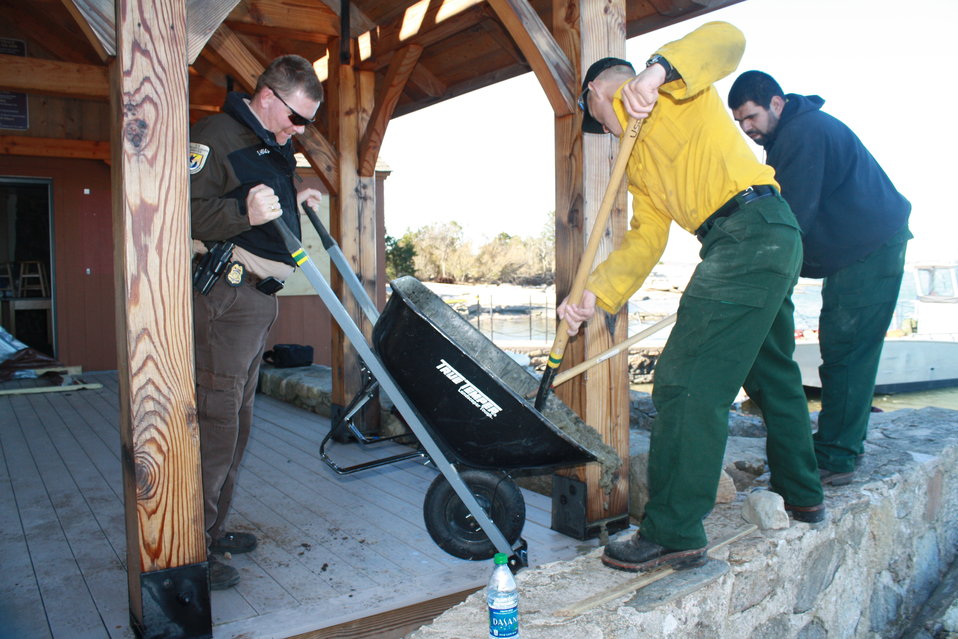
Beginning repairs at Stewart B. McKinney National Wildlife Refuge (CT)

After Hurricane Sandy, pieces of foundation and ground were disturbed on the refuge's Outer Island. Refuge staff and crews fill in disturbed ground and foundation with cement.